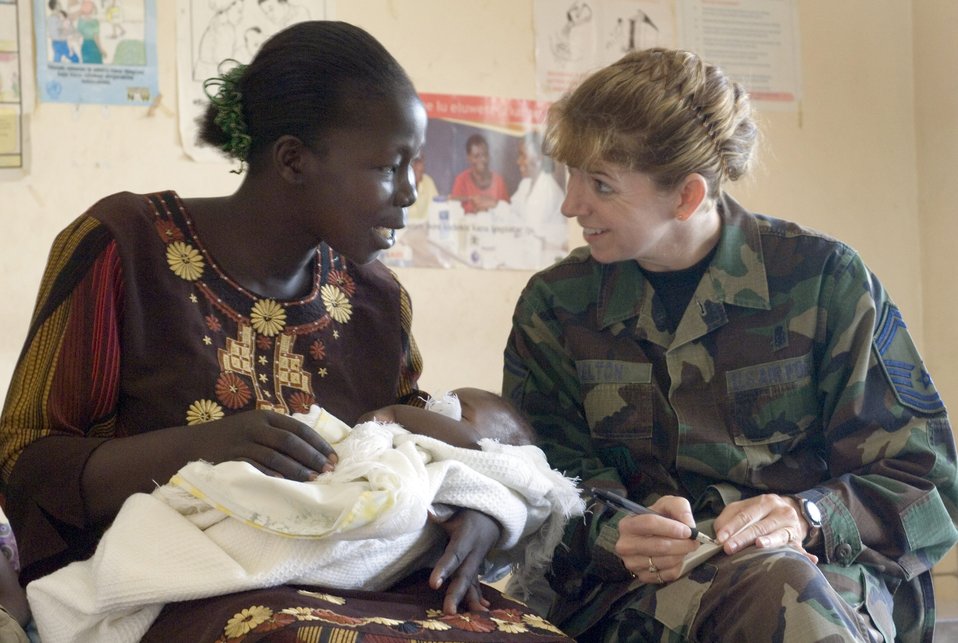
Exercise Natural Fire in Soroti

Senior Master Sgt. Donna Shelton screens a patient during the training exercise Natural Fire in Soroti, Uganda, on Aug. 14. Three East African nations and the United States are providing medical, veterinary and engineering civil assistance. Sergeant Shelton is assigned at Bolling Air Force Base, D.C.